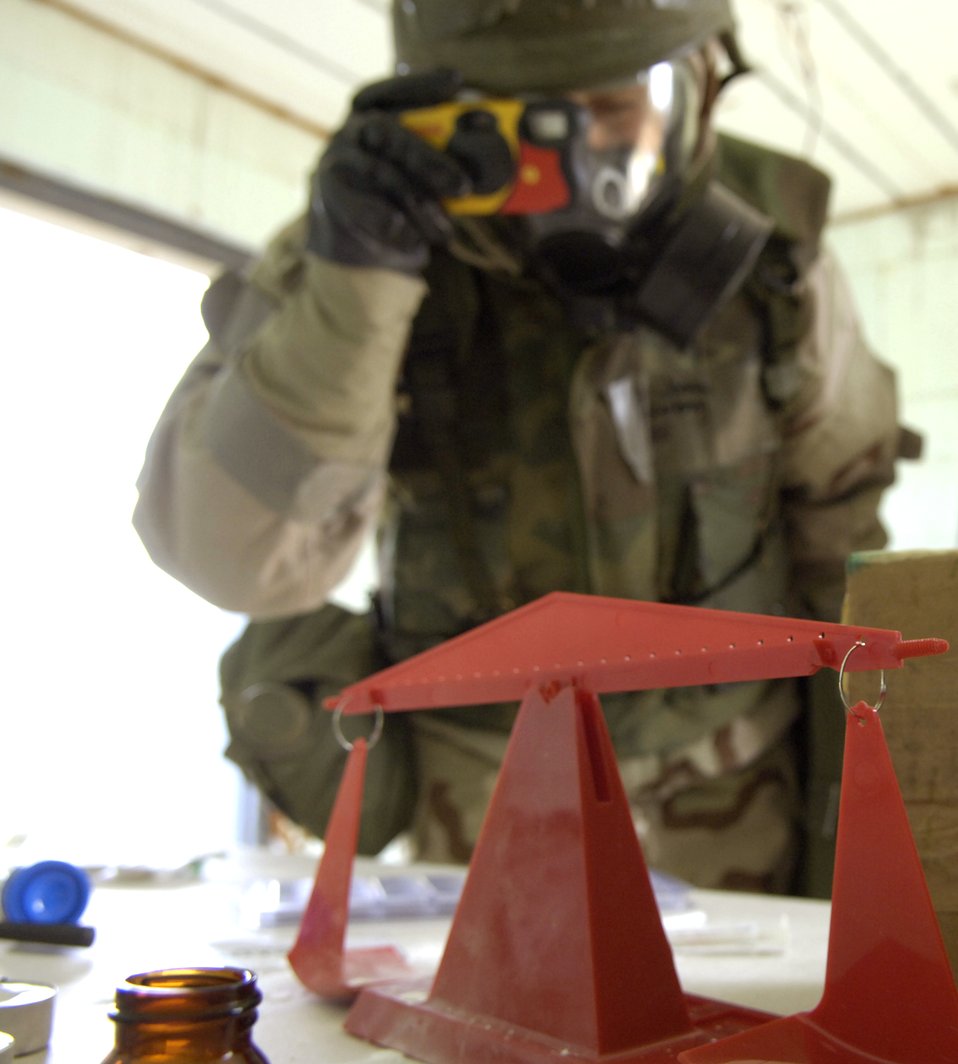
Readiness troops train for the future

Staff Sgt. Jenna Klinkenberg takes photos during a site survey of a potentially contaminated room Nov. 16. The survey was part of a readiness training exercise at Fort Leonard Wood, Mo. The exercise is designed to give readiness Airmen training scenarios developed from lessons learned during operations Iraqi Freedom and Enduring Freedom. The two-day exercise is the part of a two-week training class here. Sergeant Klinkenberg is with the 3rd Civil Engineer Squadron, Elmendorf Air Force Base, Alaska.